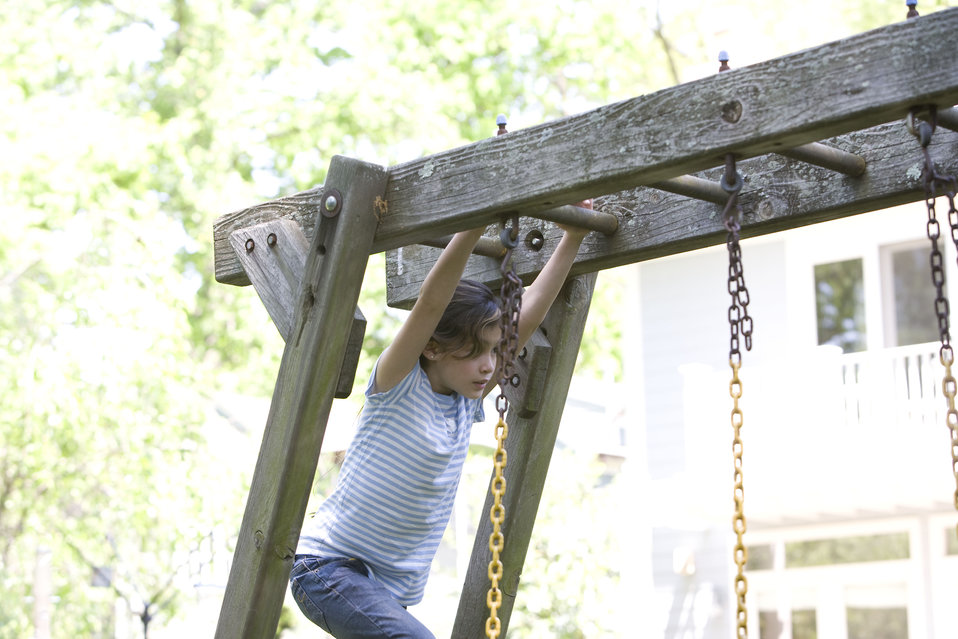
This young girl was playing outside on her backyard swing set. It's important to note that older wooden playsets may have been treated with arsenic and/or creosote, and therefore, parents need to know if these chemicals were used in their manufacture.